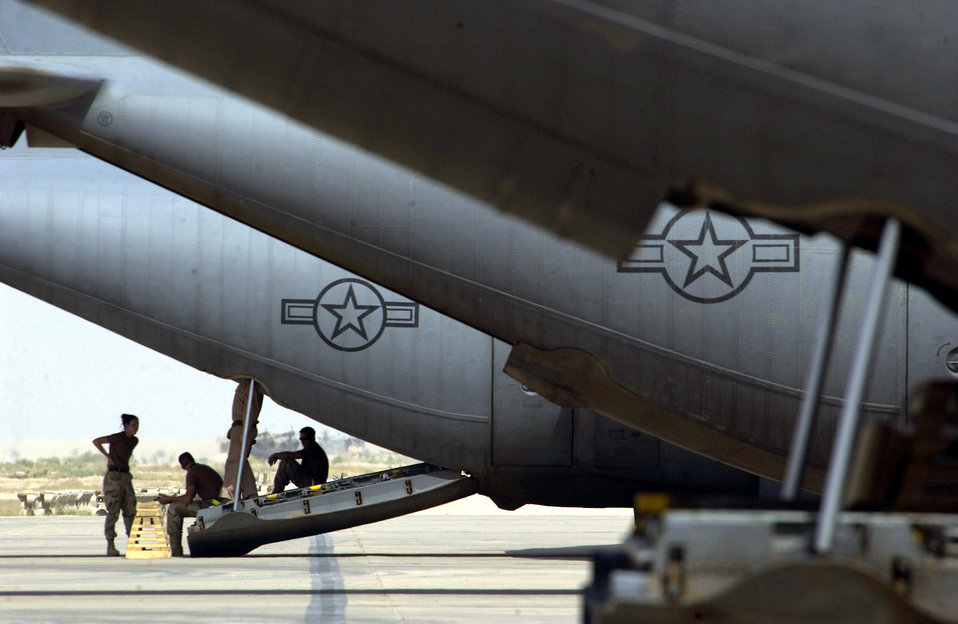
Hang time

ALI BASE, Iraq -- Maintainers from the 777th Expeditionary Aircraft Maintenance Squadron and Airmen from the 777th Expeditionary Airlift Squadron wait here July 16 to load a C-130 Hercules.